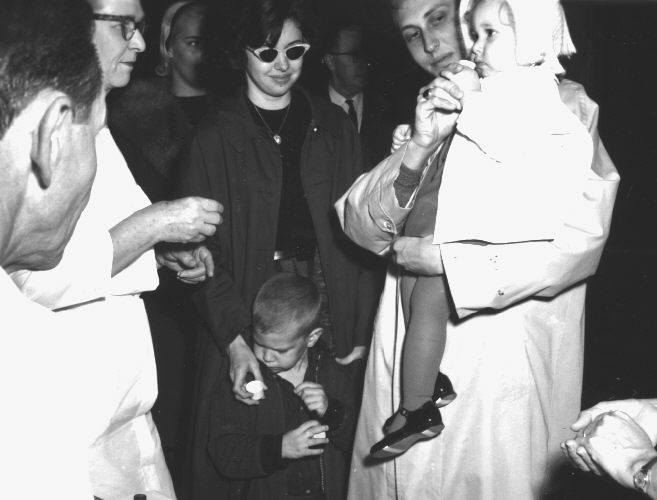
Health workers administering oral polio vaccine to child.